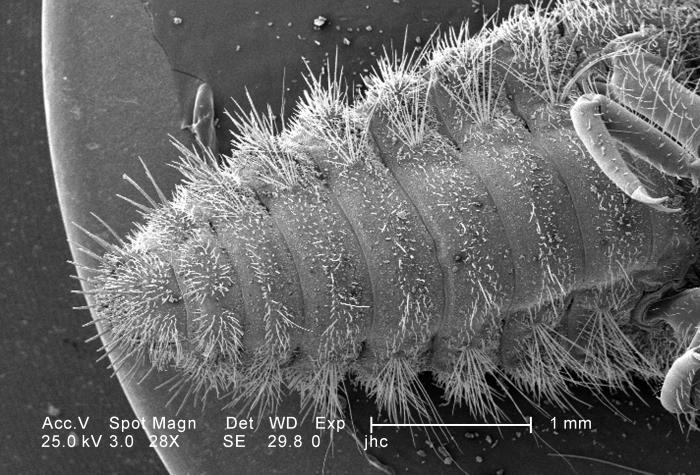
Under a very low magnification of 28X, approximately twice that of PHIL 11793, this scanning electron micrograph (SEM) depicted the ventral abdominal surface of a larval staged antlion, sometimes referred to as a 'doodlebug', because of the trails it leaves in the soft sand as it hunts for prey. This arthropod, i.e., jointed legs, undergoes dramatic morphologic changes when it metamorphoses into a beautiful flying antlion lacewing.